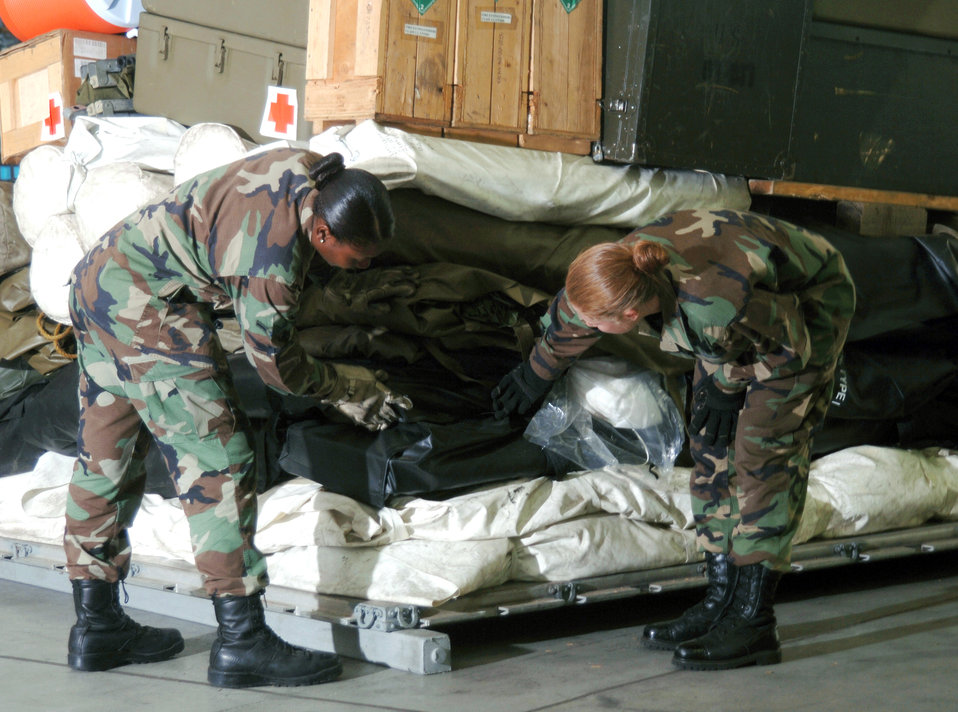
Pallet protection

YOKOTA AIR BASE, Japan -- Airmen Michelle Graves (left) and Jessica Johnson inventory an expeditionary medical support pallet. The 374th Medical Group logistics Airmen here handle about $24 million worth of medical war reserve materiel supplies and equipment for contingency operations.